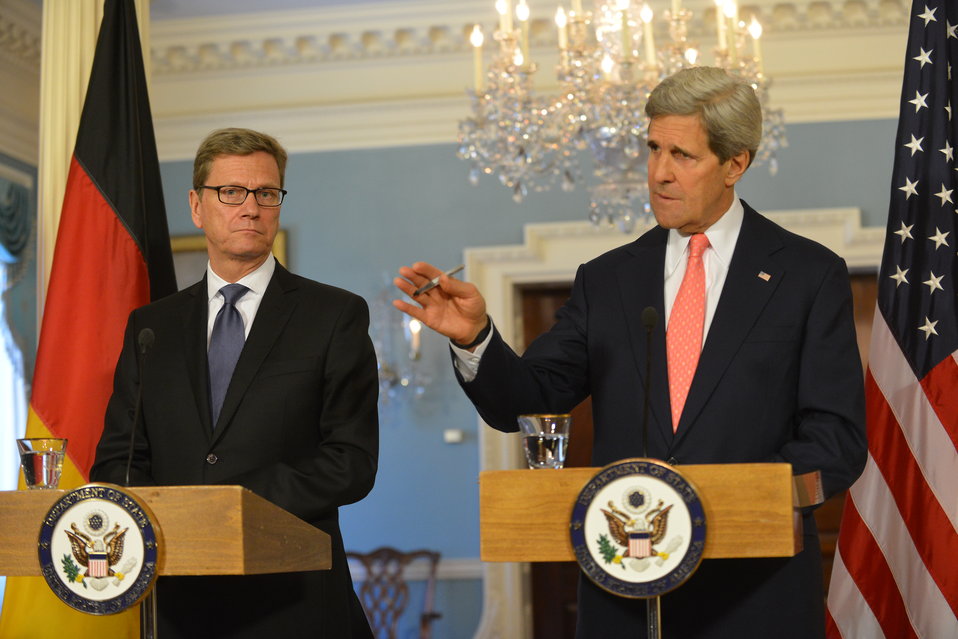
Secretary Kerry and German Foreign Minister Westerwelle Address Reporters

U.S. Secretary of State John Kerry and German Foreign Minister Guido Westerwelle address reporters after their bilateral meeting at the U.S. Department of State in Washington, D.C., on May 31, 2013.